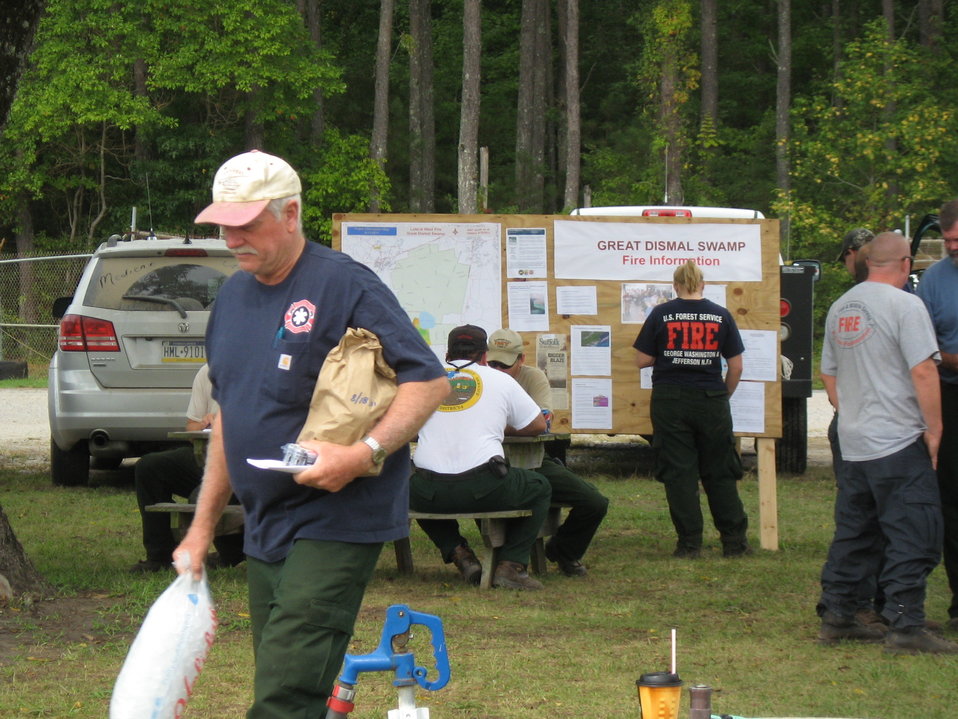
Busy camp at Lateral West

Suffolk, VA, August 2011: The Incident Command Post for the Lateral West Fire on Great Dismal Swamp National Wildlife Refuge is a busy place after the morning operational and safety briefing. Over 400 firefighters and support personnel have been assigned to the fire.